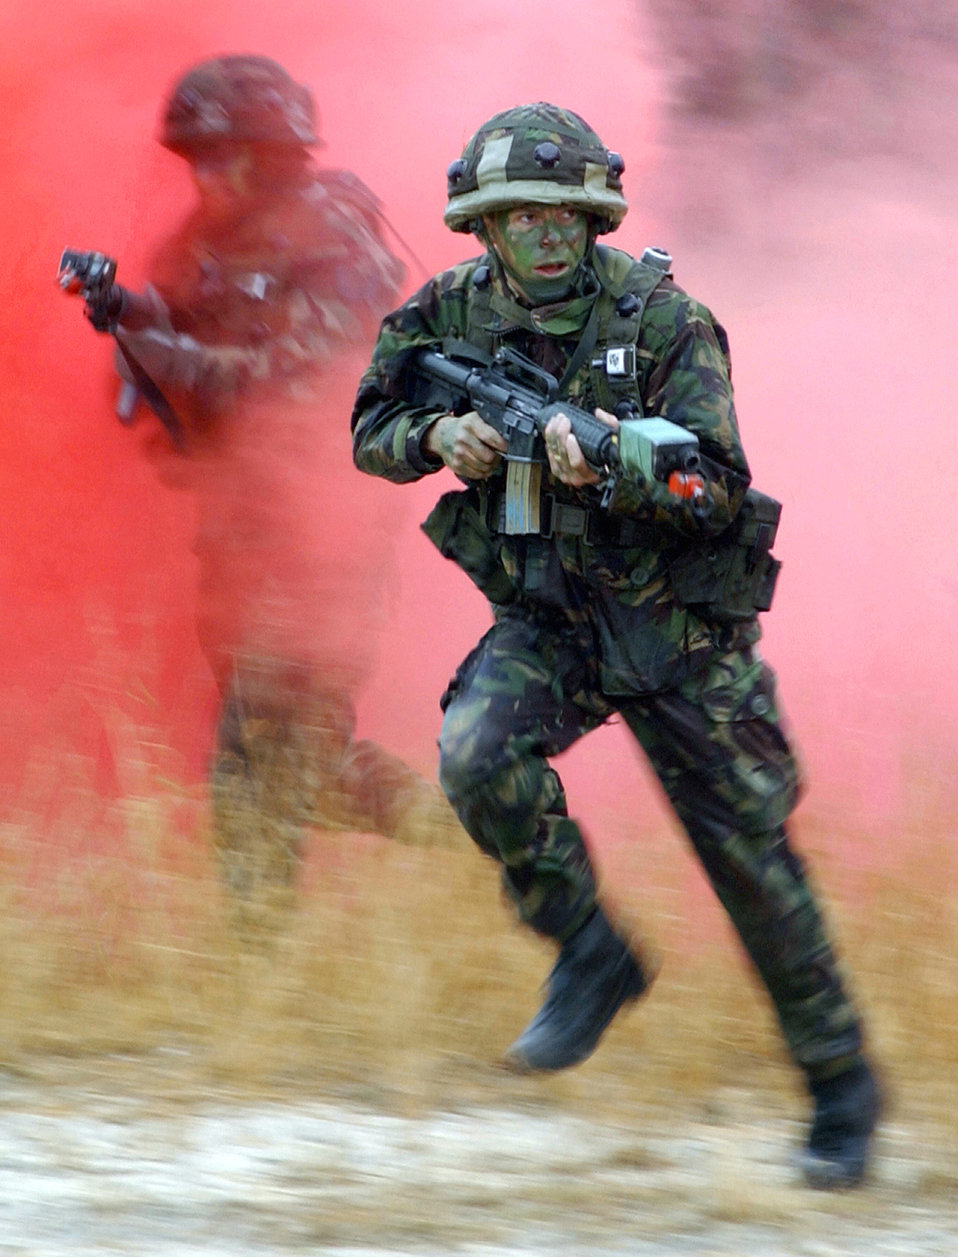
The British are coming

FORT DIX, N.J. -- British explosive ordnance disposal specialists participate in combat scenarios along side their American counterparts during a Phoenix Readiness class. Air Mobility Command's Phoenix Readiness combat training has ended and will be replaced in October by the Air Force's expeditionary combat-support training program, Eagle Flag.